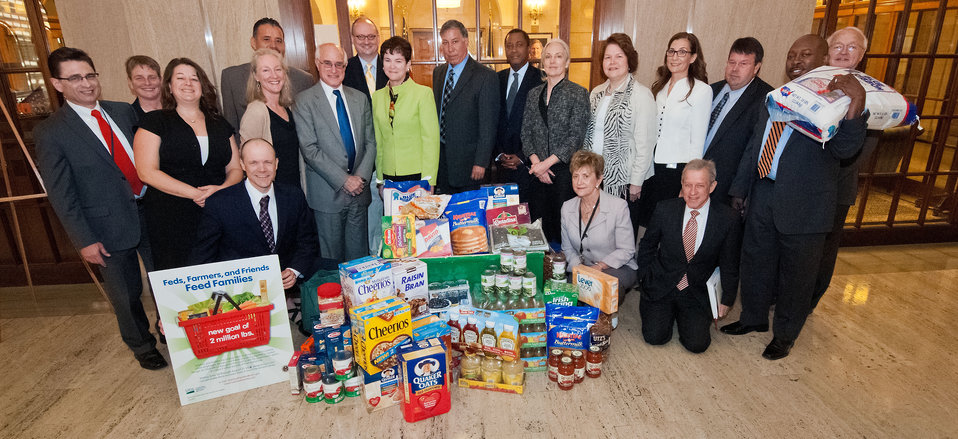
From left: Fred Pfaeffle, Deputy Assistant Secretary Civil Rights, Robin Heard, Deputy Assistant Secretary for Administration, Sarah Bittleman, Senior Advisor to the Secretary, Ann Wright, Deputy Assistant Secretary, Congressional Relations, Oscar Gonzales, Deputy Assistant Secretary for Administration, Harris Sherman, Under Secretary, Natural Resources and Environment, Matt Paul, Director, Office of Communications, Krysta Harden, Chief of Staff, Ed Avalos, Under Secretary Marketing and Regulatory Programs, Dr. Joe Leonard, Assistant Secretary Civil Rights, Ann Mills, Deputy Under Secretary, Natural Resources and Environment, Judith Canales, Deputy Under Secretary, Rural Development, Lisa Pino, Deputy Administrator of the Supplemental Nutrition Assistance Program, John Holiday, Chief Financial Officer, Karis Gutter, Deputy Under Secretary, Farm and Foreign Agricultural Services and Kevin Concannon, Under Secretary, Food Nutrition and Consumer Services. Kneeling form left: Doug O’Brien, Deputy Under Secretary, Rural Development, Janey Thornton, Deputy Under Secretary, Food Nutrition and Consumer Services and Jerold Mande, Deputy Under Secretary, Food Safety Inspection Service. Members of Agriculture Secretary Tom Vilsack’s cabinet kicked-off the Feds, Farmers and Friends Feed families campaign at the United States Department of Agriculture in Washington, D.C., on Wednesday, June 6, 2012 to support the great need of donated food this summer. Starting June 1 through August 31 United States Department of Agriculture employees, farmers and friends are joining together to combat hunger at USDA offices throughout the country. The goal this year is 2 million pounds of food nationwide. FedsFeedFamilies@opm.gov and www.FedsFeedFamilies.gov.